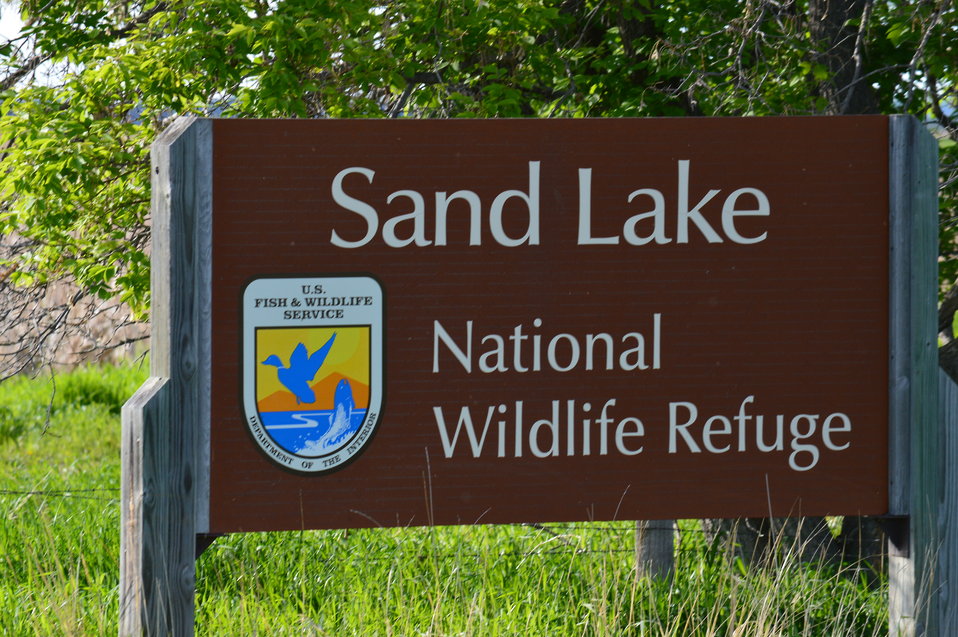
Sand Lake NWR sign close-up

Scenery and wildlife at Sand Lake National Wildlife Refuge in South Dakota